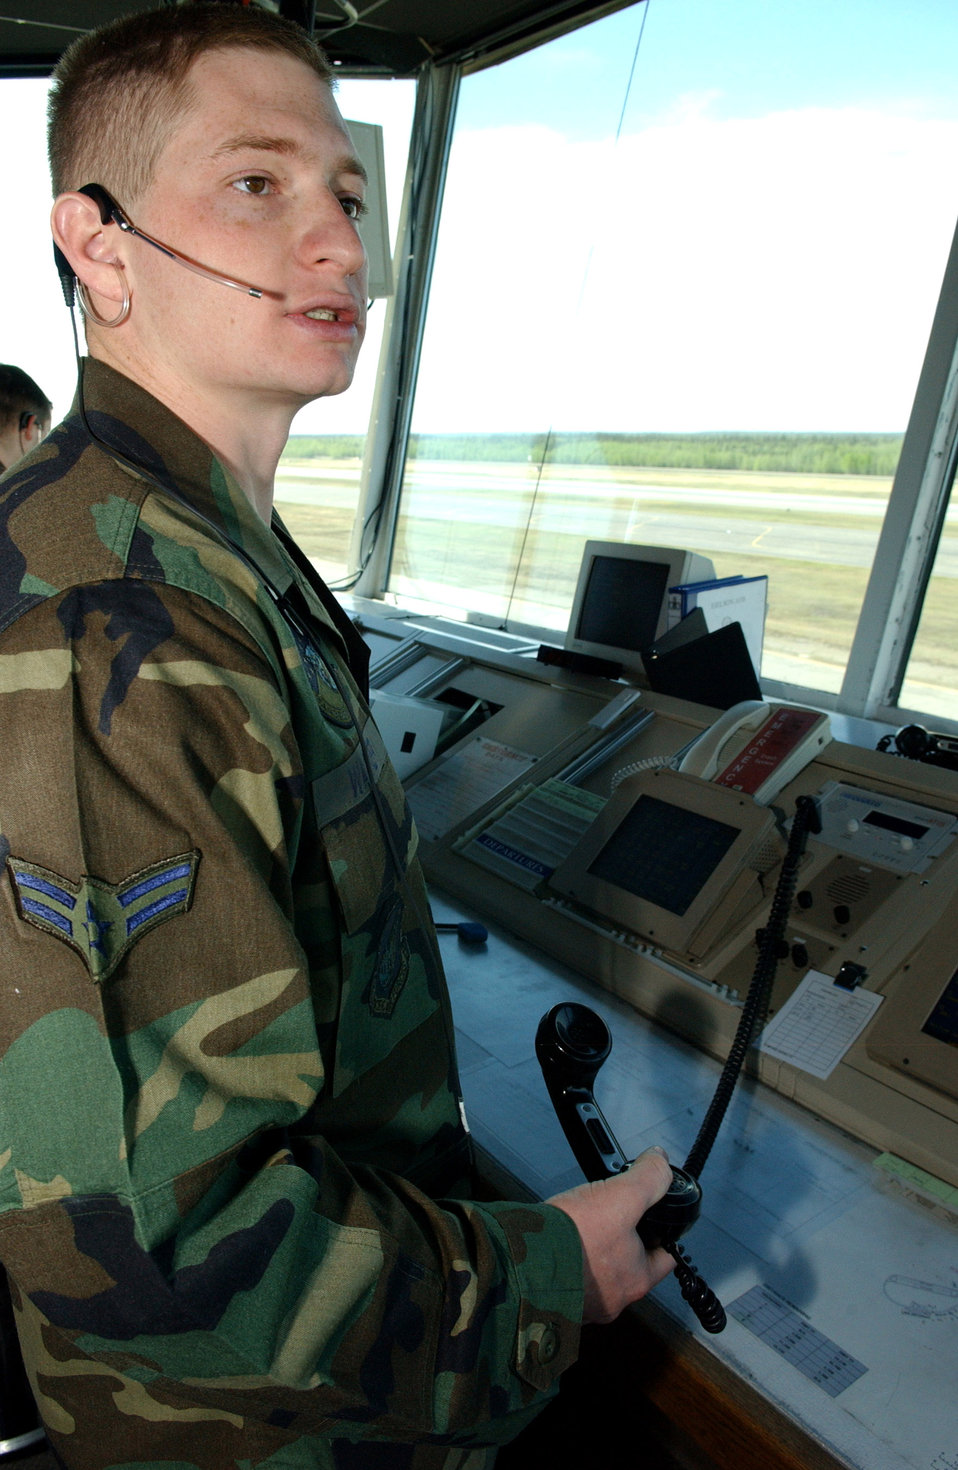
Cleared for takeoff

Airman 1st Class Kenneth Wagner, 354th Operations Support Squadron air traffic controller, releases a new Automatic Terminal Information Service to all pilots at Eielson Air Force Base, Alaska, May 23. The ATIS is information which includes the type of weather, wind direction and wind speed, and is updated every time conditions change.